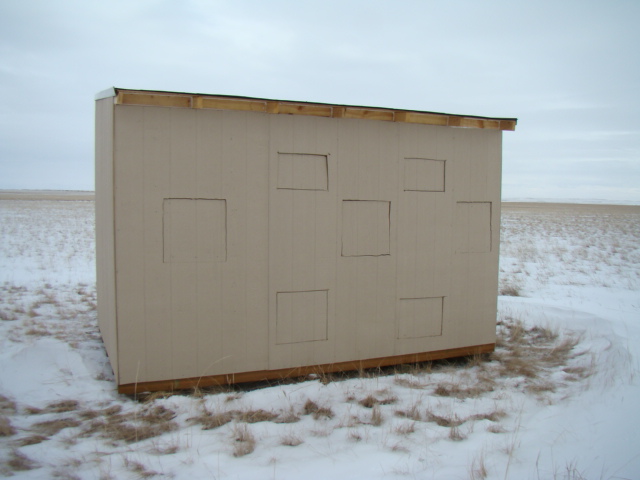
'Grouse House'

The mating routine of sharp-tailed grouse involves males displaying communally at a traditional site (one used year after year). This site is known as a “lek.” Males compete for mates by performing a ritualized dance in conjunction with calling (often a booming sound) and inflating purplish air sacs along their necks. Females approach the edge of the lek, observe and eventually select a dance participant to mate with.